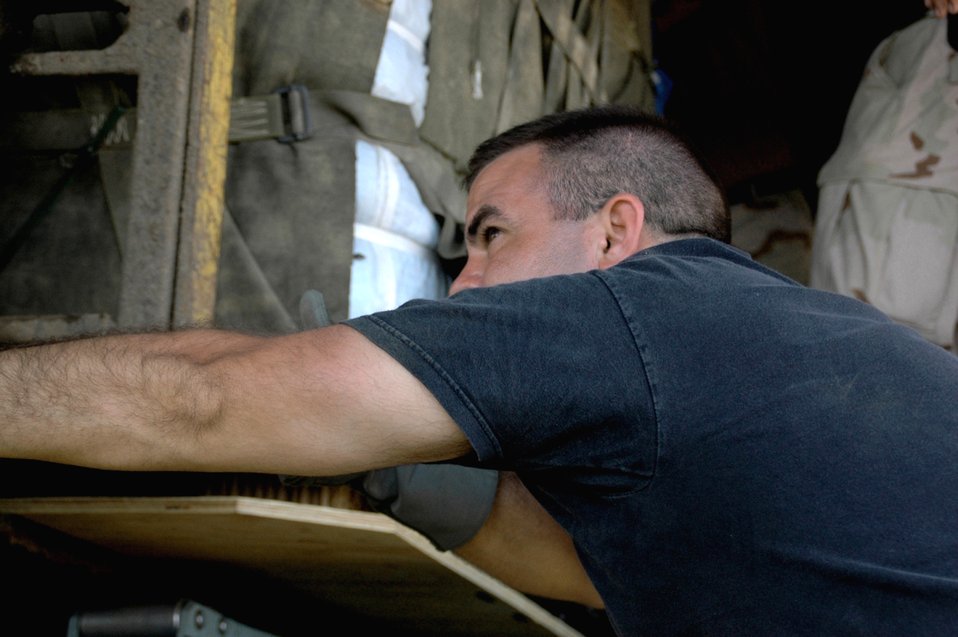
Operation Unity Knight brings relief to Kenya

Master Sgt. Eric Wilkins uses a steady eye to guide a pallet of supplies onto a C-130 Hercules Dec. 9. The Air Force is air-dropping tents, tarps and mosquito netting to flood refugees in eastern Kenya. Sergeant Wilkins is a loadmaster from Dyess Air Force Base, Texas, deployed to the 746th Expeditionary Airlift Squadron. After weeks of rain in Dadaab region in Kenya, camps housing about 160,000 Somali refugees who fled their country 14 years ago following an uprising were damaged and many crops were destoyed. The Combined Joint Task Force - Horn of Africa military officials monitoring the developments began Operation Unity Knight and sent an Air Force C-130 assigned to the 379th Air Expeditionary Wing based in Southwest Asia because the roads in the area were impassable.